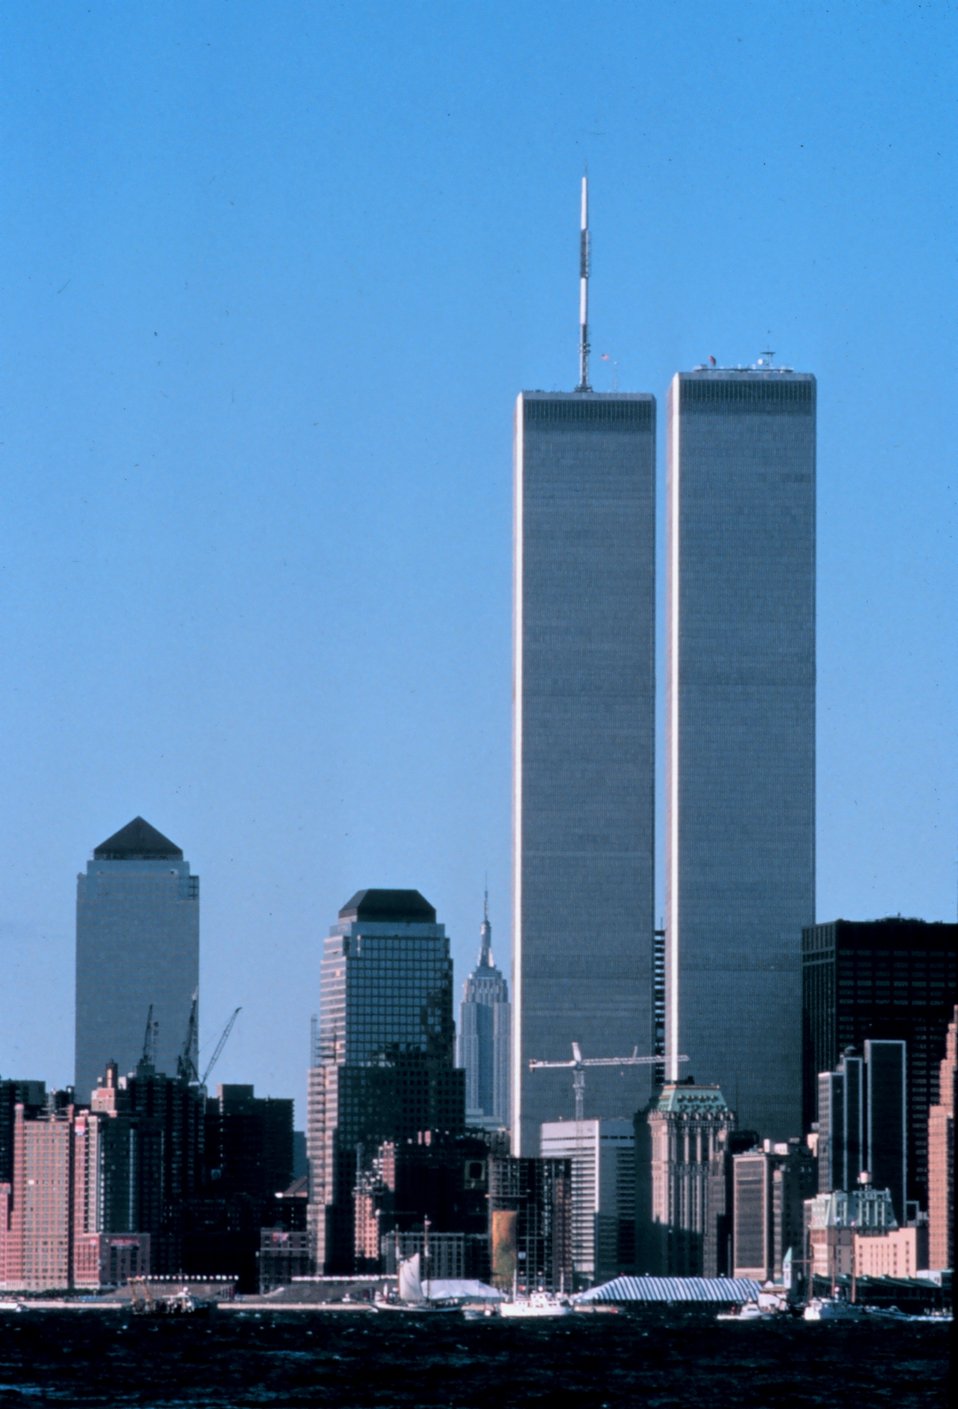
Manhattan - World Trade Center